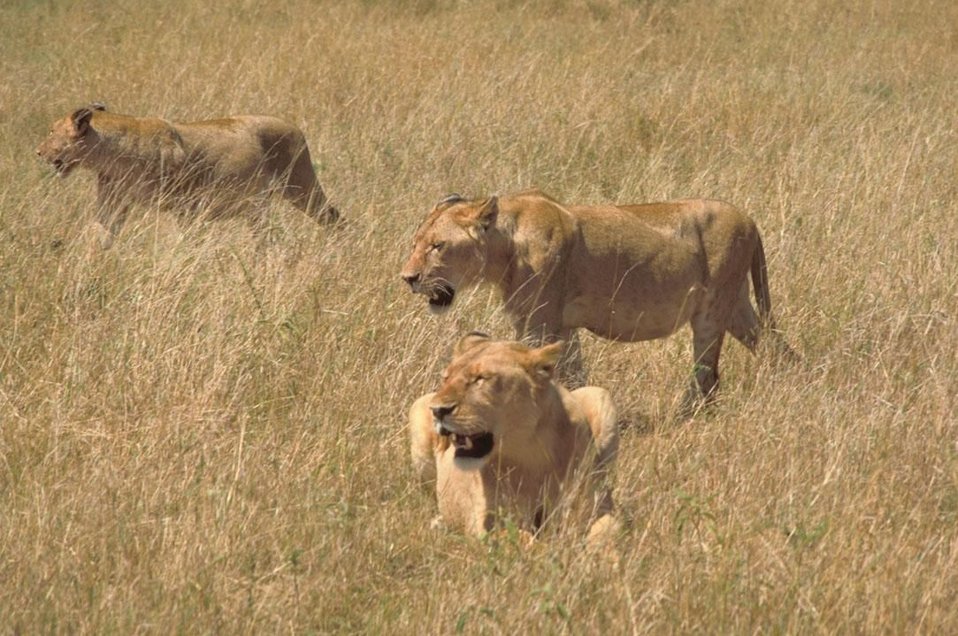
English:
Image title: African lions in hunting Image from Public domain images website, http://www.public-domain-image.com/full-image/fauna-animals-public-domain-images-pictures/lion-public-domain-images-pictures/african-lions-in-hunting.jpg.html